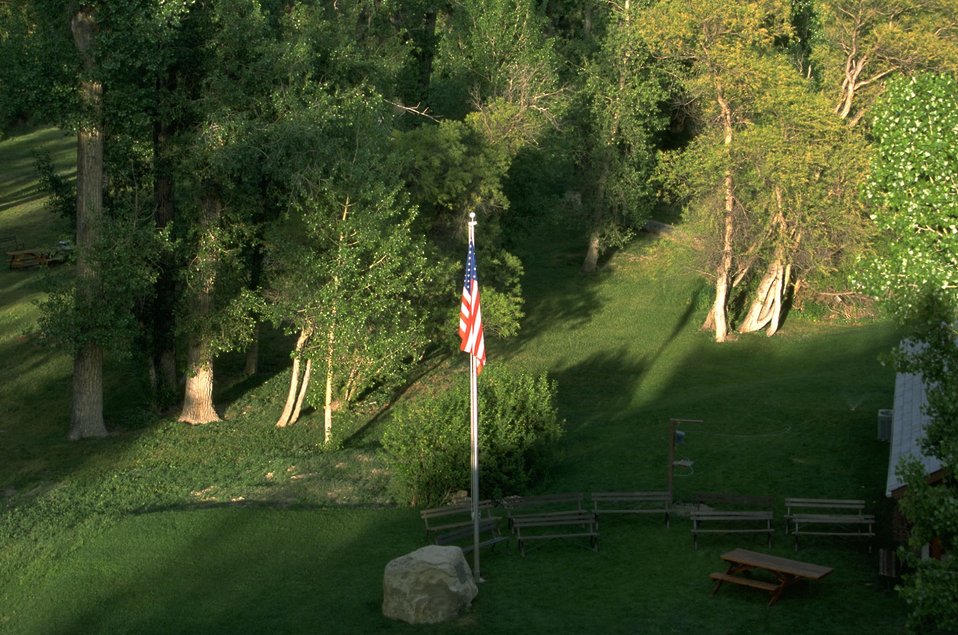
Rear lawn area behine the Pompeys Pillar Visitor Center